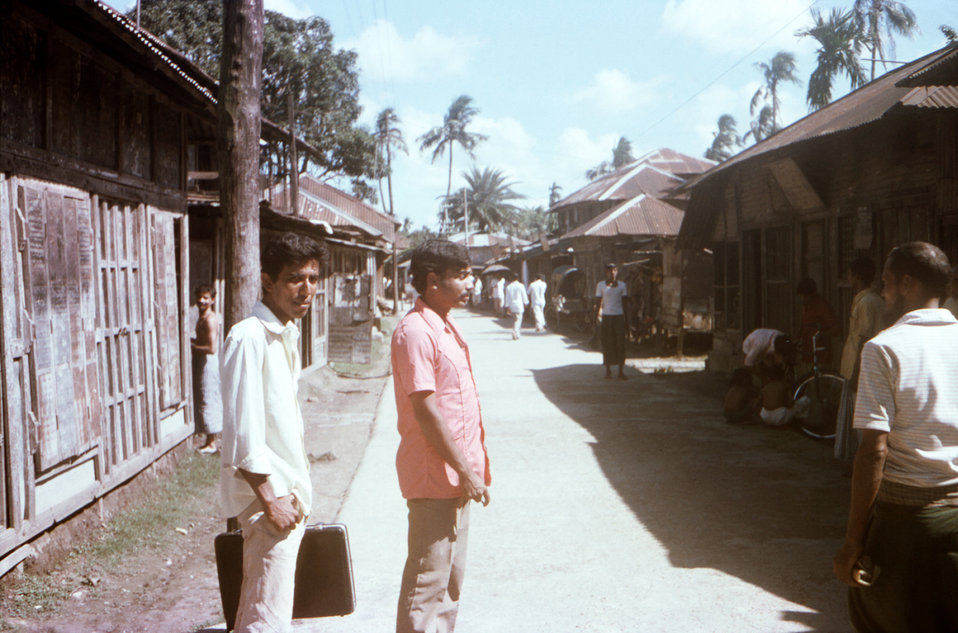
This November, 1975 photograph depicted the daytime activities on Main Street in Patuakhali Town, Bangladesh. About to cross the street, were two men, one holding a briefcase named Arun Gomes, who was a smallpox eradication team interpreter, and wearing his peach-colored shirt, team member, Dr. Mohammed Nurul Islam Sarker.